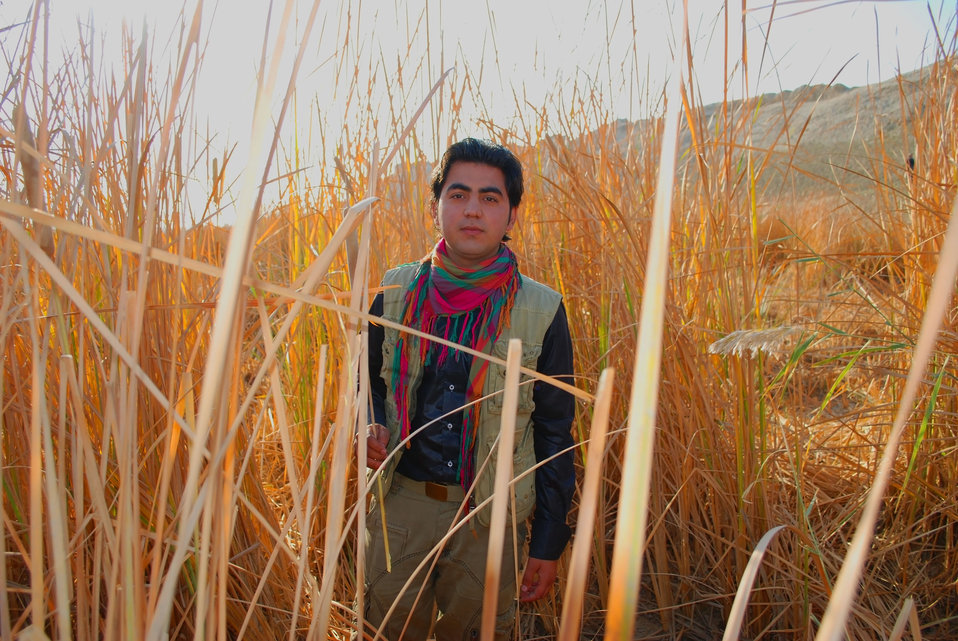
'On the Road' in Balkh Province